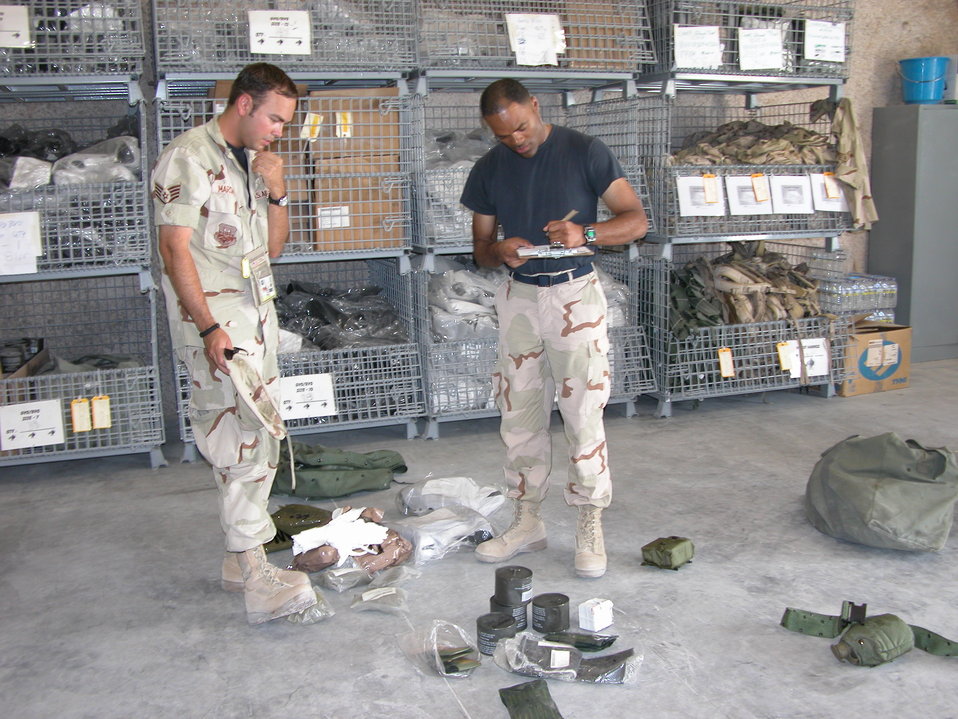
Cost-saving mobility bag test case begins

SOUTHWEST ASIA -- Staff Sgt. Cameron Marshall (left) turns in his mobility gear to Tech. Sgt. Paul Roby at a forward-deployed location. Airmen in air and space expeditionary force cycles 3, 4, 5 and 6 can turn in their mobility bags and chemical warfare equipment to theater materiel managers before redeploying. This equipment will be stored at the three expeditionary theater distribution centers located at primary hubs here. Sergeant Marshall is with the Combined Air Operations Center, and Sergeant Roby is assigned to the 379th Expeditionary Logistics Readiness Squadron.